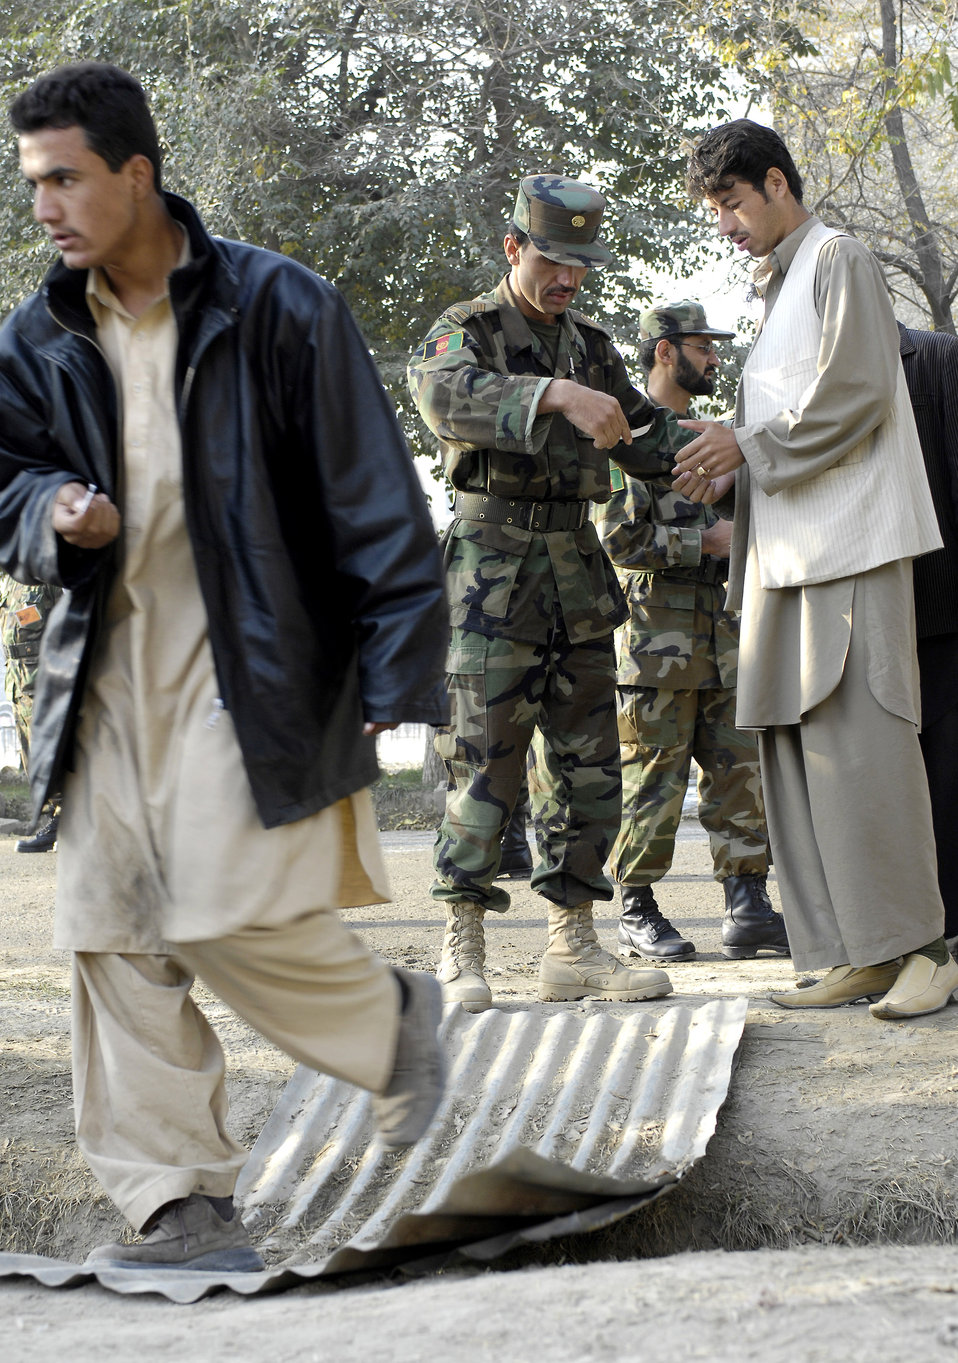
Airmen, Soldiers help establish military academy

Sgt. Maj. Mohamad Alim checks the identification numbers of perspective cadets and directs them to their assigned groups at the Afghan National Army Academy, Kabul, Afghanistan, Oct. 25. There are more than 1,800 perspective cadets here, all hoping to be one of the approximately 300 chosen for the new freshman class.